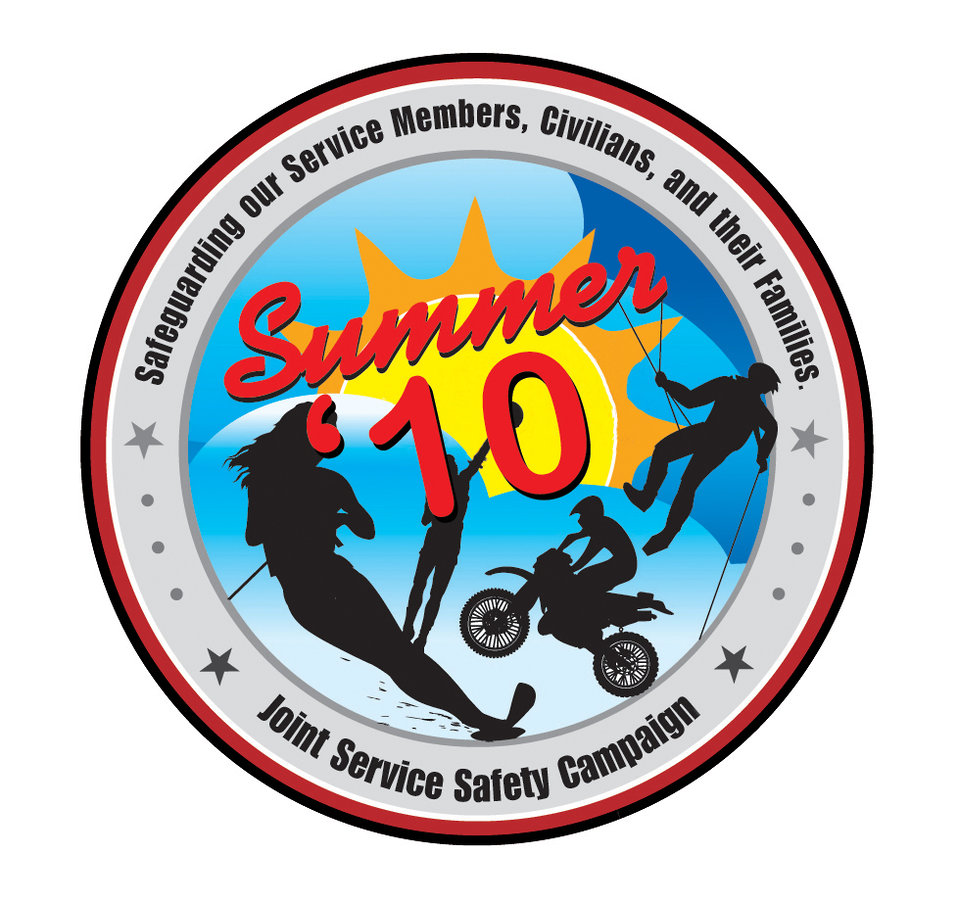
Critical Days of Summer

The Critical Days of Summer safety campaign will begin May 28 and run through Sept. 7.